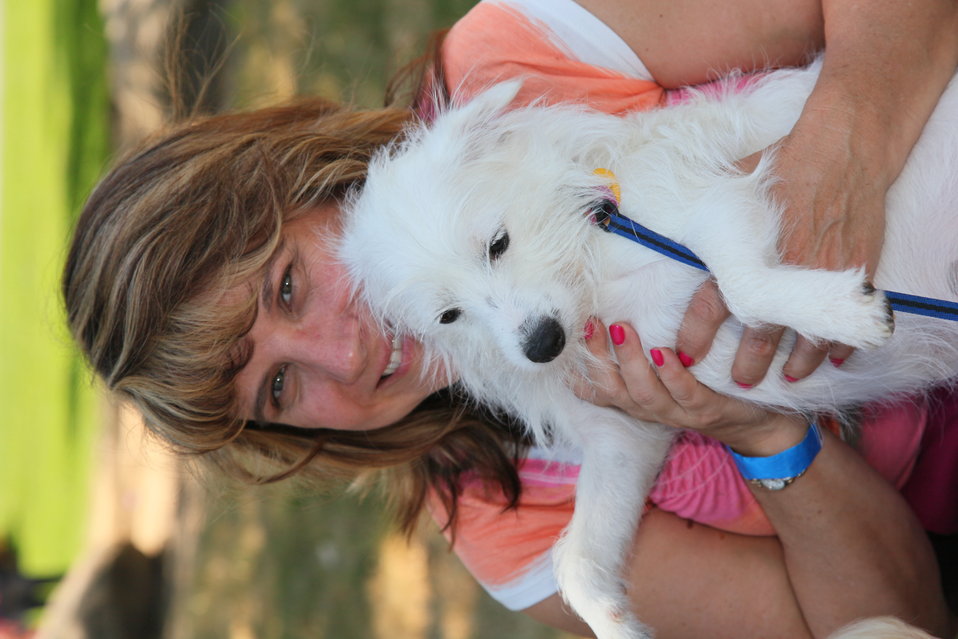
2011 Annual Picnic